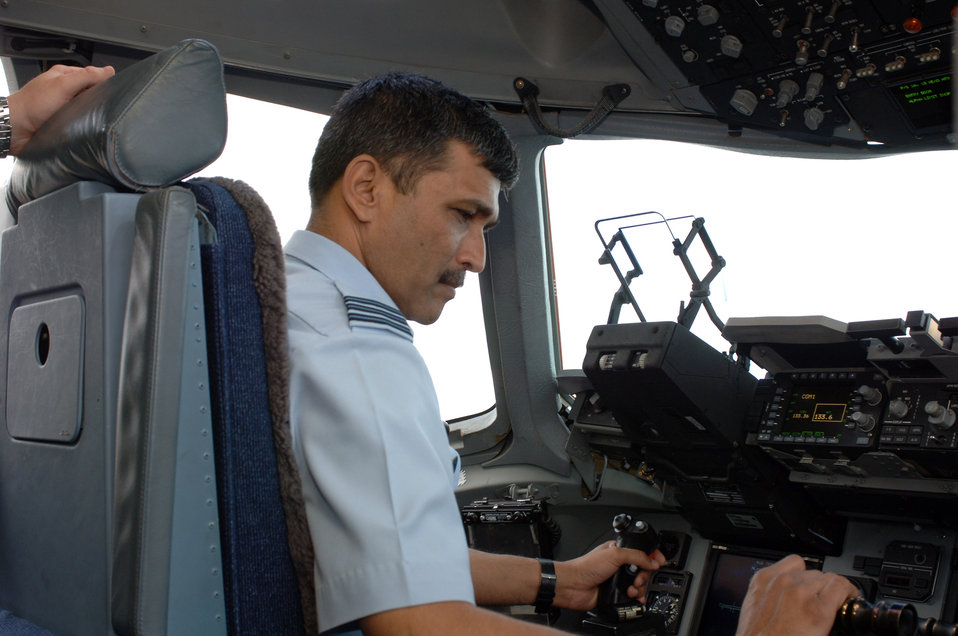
U.S., India strengthen partnership

Indian air force Wg. Cdr. SK Vidhate sits in the cockpit of a C-17 Globemaster III while visiting with the 535th Airlift Squadron Feb. 25 at Hickam Air Force Base, Hawaii. Members of the 613th Air and Space Operations Center at Hickam AFB hosted the visit Feb. 23 through 27, during which Indian air force officers learned how the United States commands and controls airpower in the Pacific through the 613th AOC.